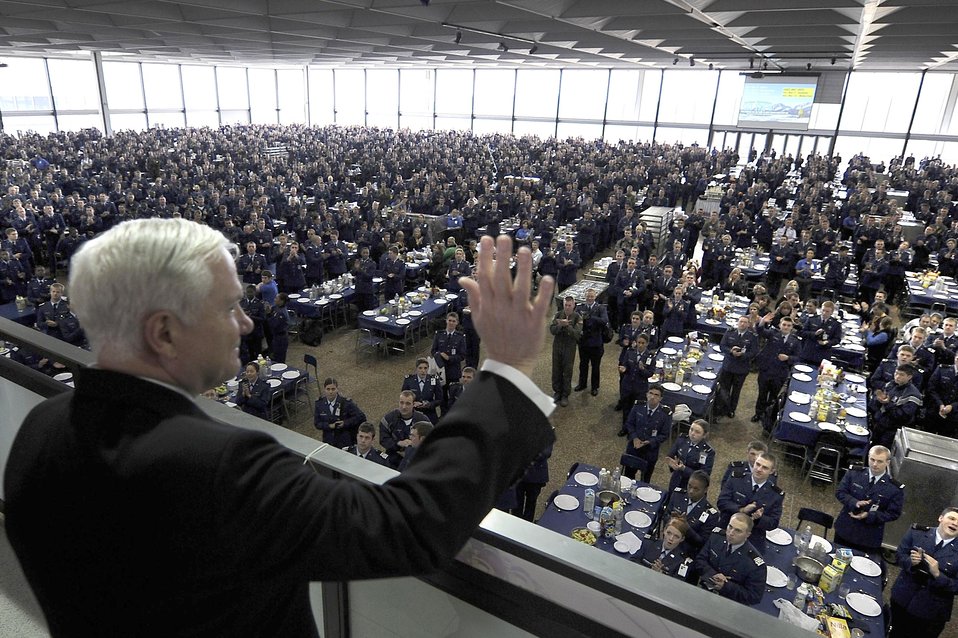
Defense Secretary Robert Gates Teaches at the Air Force Academy in Colorado Springs Colorado

Defense Secretary Robert Gates gives a wave to Air Force Academy Cadets during lunch in Mitchell Hall after teaching classes as part of the Capstone Seminar at the Air Force Academy in Colorado Springs, Co., Mar. 4, 2011.